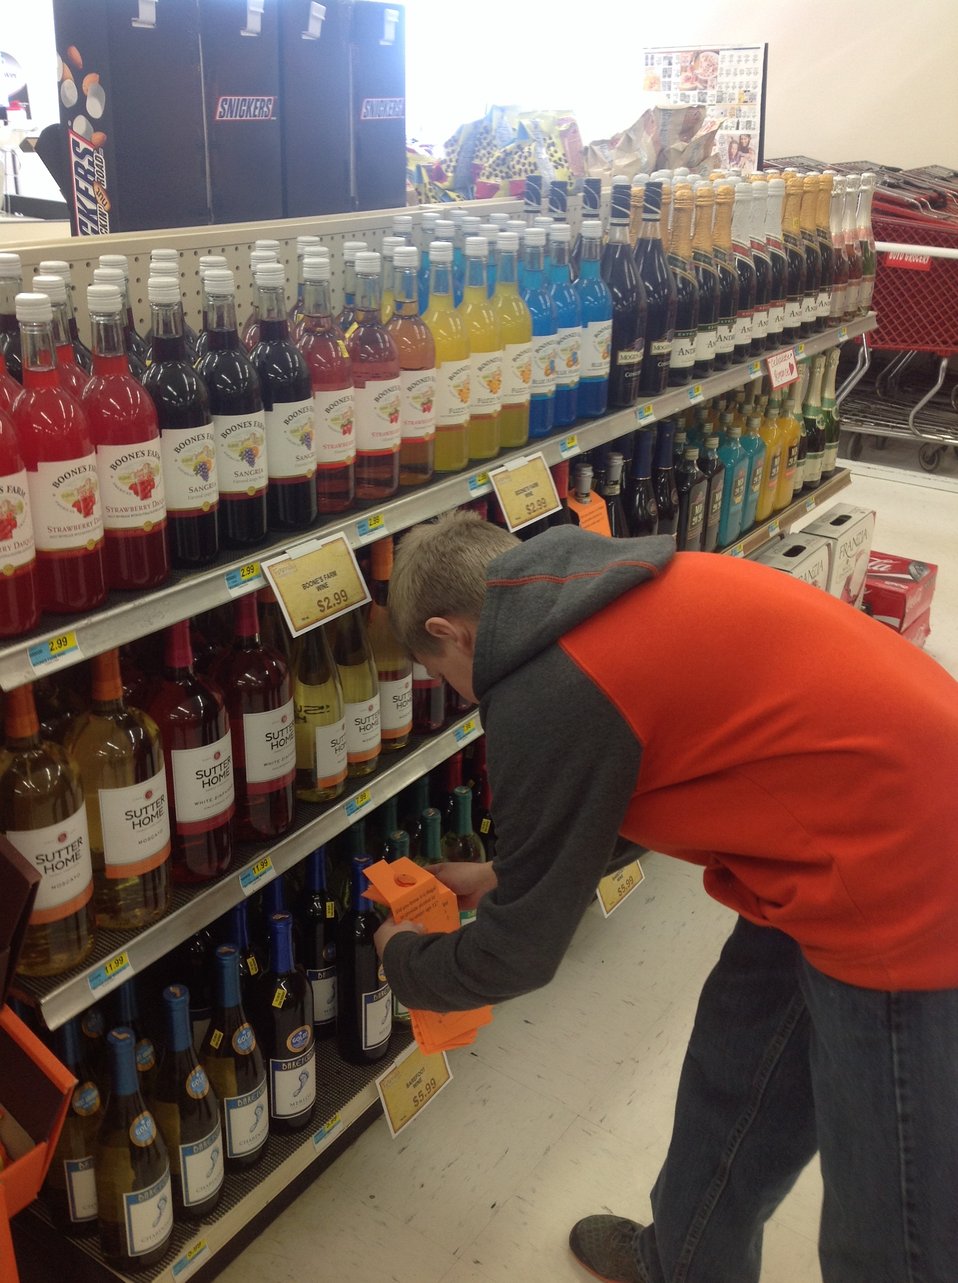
Getting the Word Out

Teenagers from the Van Buren County SAFE Coalition's, Youth Leadership Council (YLC) in Keosauqua, Iowa participate in various events during National Drug Facts Week, 2014.